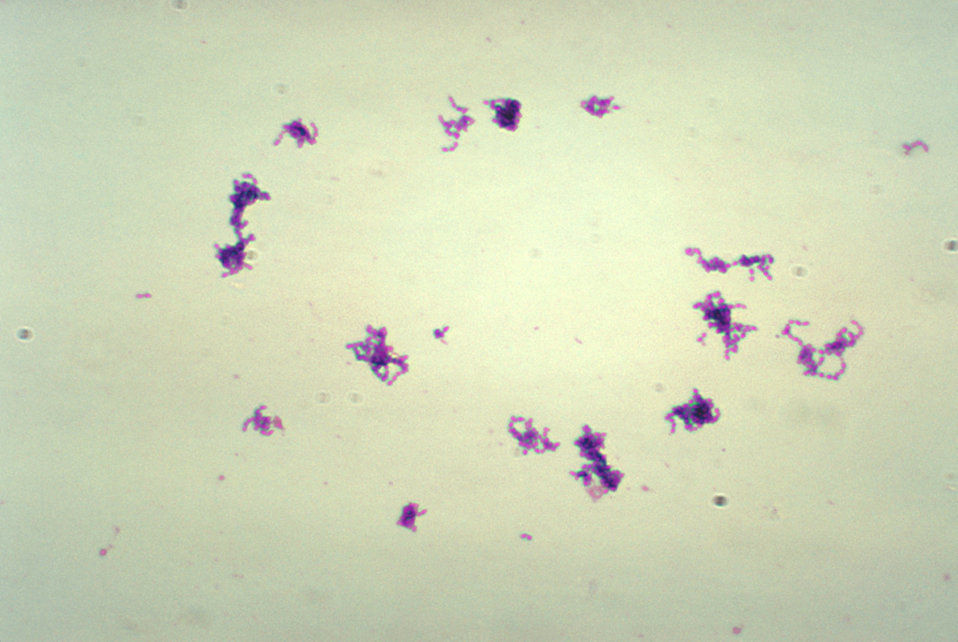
This micrograph depicts a number of Peptostreptococcus sp. bacteria that had been grown in Schaedler's broth, and processed using Gram-stain technique.